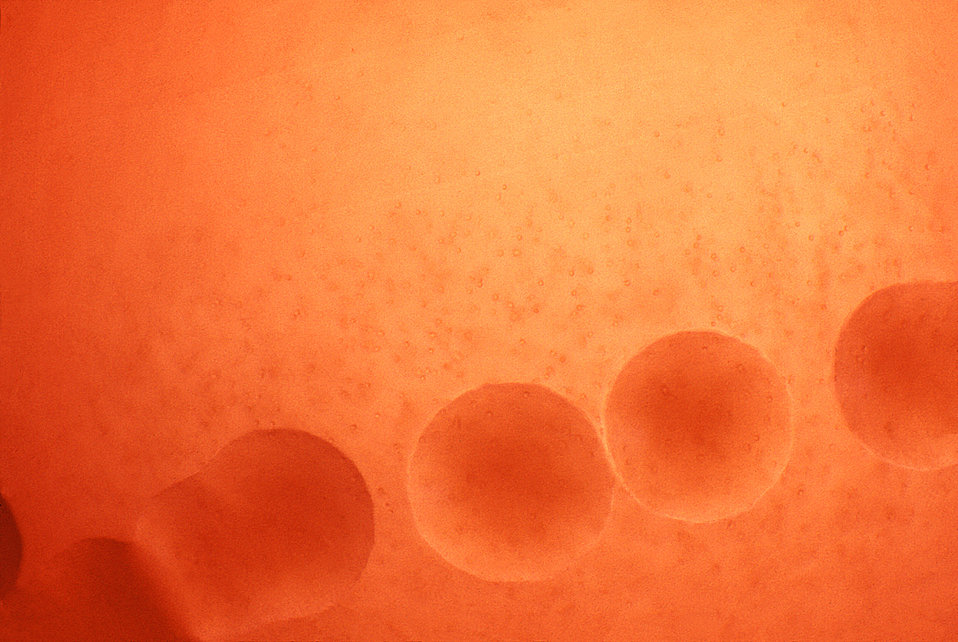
Magnified 100x, this 1977 photograph depicted a Petri dish filled with trypticase soy agar medium containing 5% defibrinated sheep's blood, i.e., blood agar plate (BAP). After having been inoculated with alpha-hemolytic Streptococcus anginosus bacteria, i.e., a member of the Gram-positive viridans group of streptococci (VGS), the BAP was incubated in a carbon dioxide enriched atmosphere at 35oC for 24 hours. The culture grew bacterial colonies, which were seen here. The characteristic color changes, i.e., a hazy, faded, indistinct region surrounding each colony in which some of the red blood cells (RBCs) were destroyed in the blood agar medium, or "hemolyzed", indicated that these bacteria were indeed alpha-hemolytic in nature.It is the incomplete nature of the hemolytic reaction adjacent to the colonies, which spares numbers of RBCs in the blood agar medium, that is of qualitative importance when distinguishing alpha from beta-hemolysis